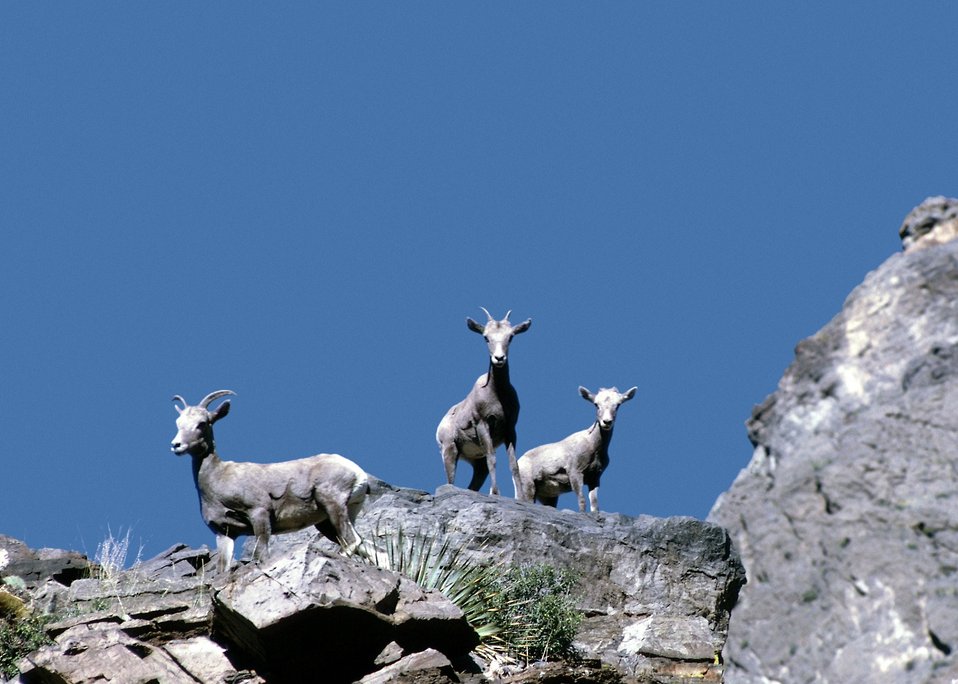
Desert Big Horn Sheep